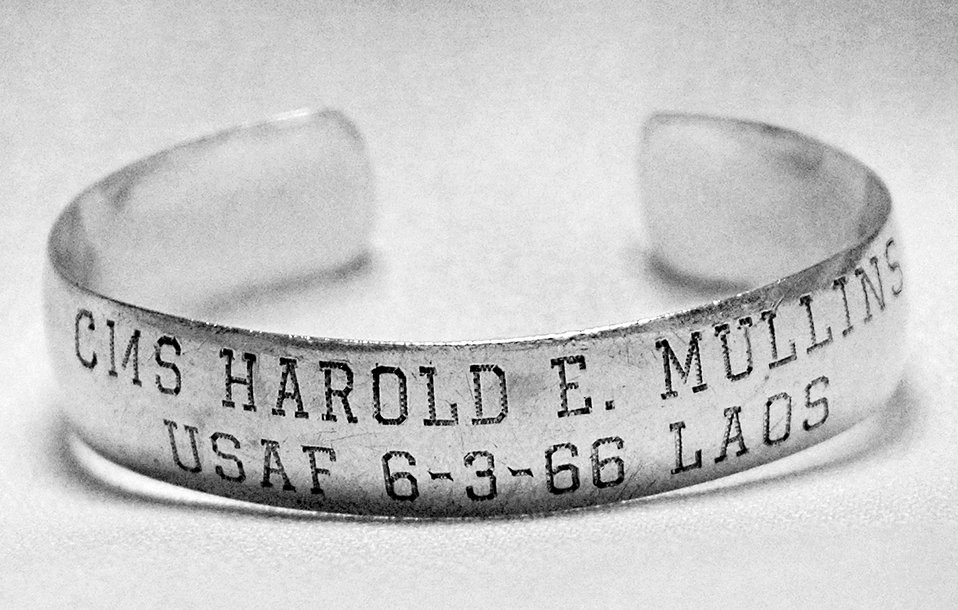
Reservist returns POW/MIA bracelet worn in remembrance

WRIGHT-PATTERSON AIR FORCE BASE, Ohio -- Master Sgt. Sheila Couzins wore this POW/MIA bracelet in remembrance of Chief Master Sgt. Harold Mullins who was missing since June 1966. She returned the bracelet to Chief Mullins' family after his remains were buried in Arlington National Cemetery in November.